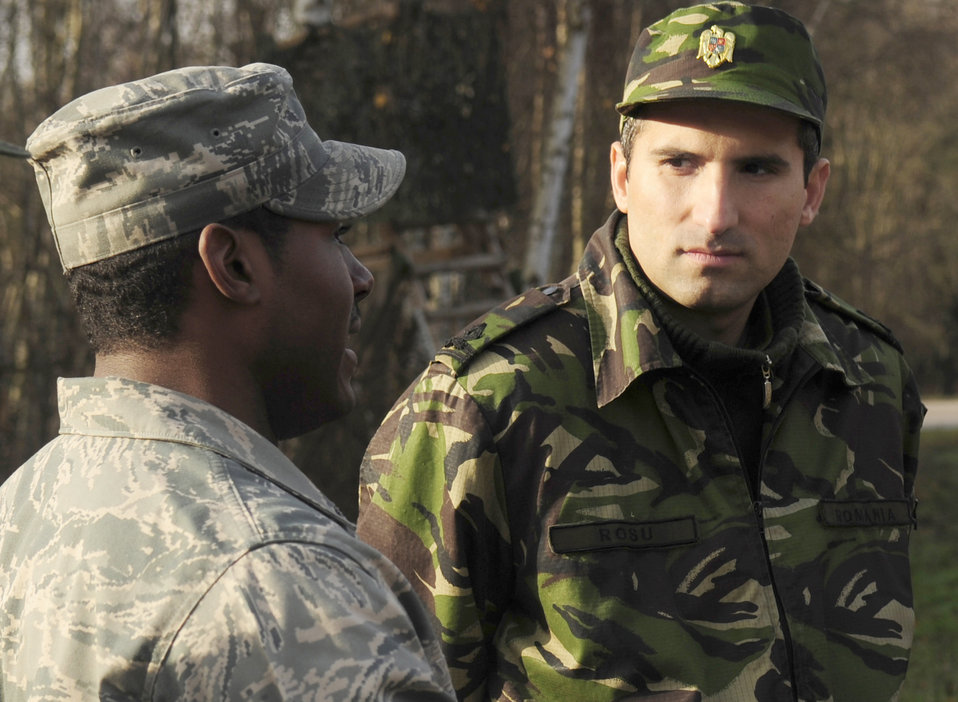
Airmen from across the world participate in Silver Flag

Master Sgt. Lamont Hall explains to Romanian air force 2nd Lt. Octavian Rosu the practical exercise being carried out by Airmen during a Silver Flag contingency operations exercise Nov. 20, 2010, at Ramstein Air Base, Germany. Silver flag is a weeklong, ongoing training program that combines classroom and practical application exercises to prepare Airmen for deployment scenarios. Members of the Romanian air force were invited to observe training and share information. Sergeant Hall is a Silver Flag cadre member.